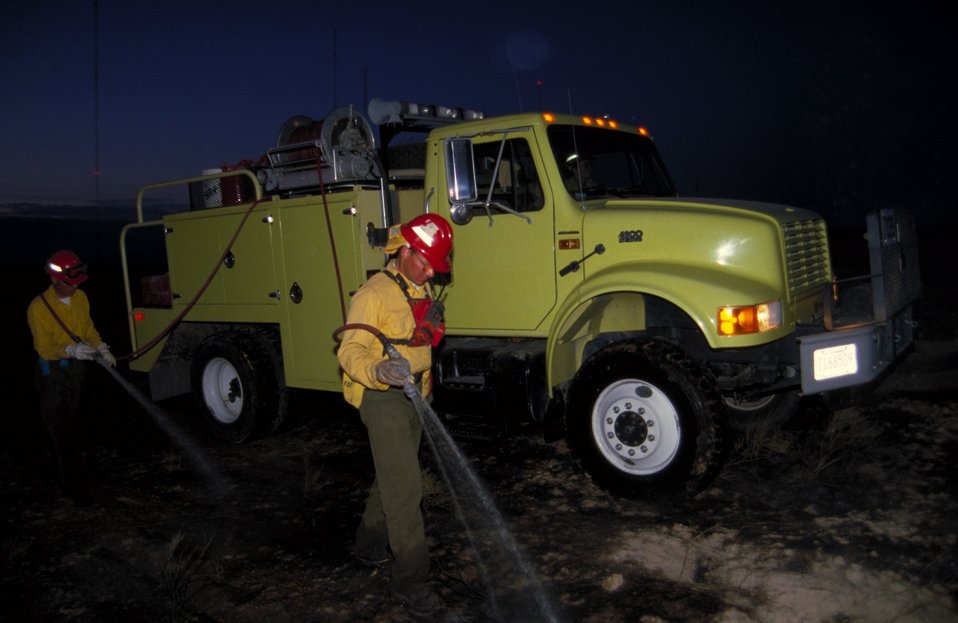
Wildland fire fighter Fire Season 2000 Lower Snake River District LSRD